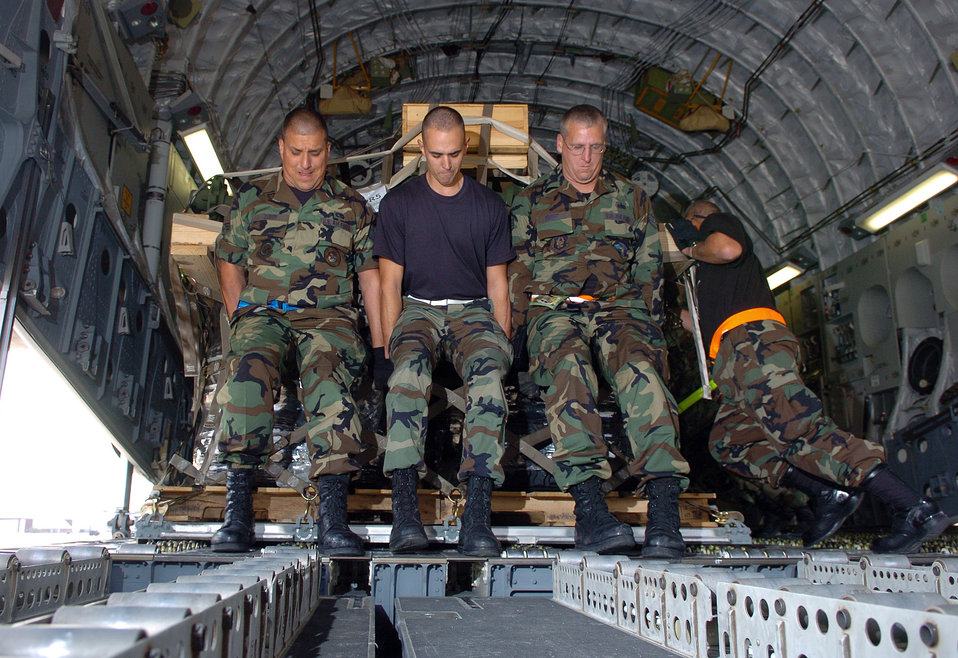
Incirlik AB

Senior Airmen Marco Zuber (left), John Clayton and Staff Sgt. David Ebert load a C-17 Globemaster III at Incirlik AB, Turkey, Nov. 13. Over half of all air cargo delivered to support Operation Iraqi Freedom is processed through here. By flying critical supplies via Globemaster from this eastern Turkey air base directly to troops at remote locations in Iraq, More than 3,300 convoy truck missions and 9,000 servicemembers supporting the convoys are taken off Iraq roads each month. Airmen Ebert, Zuber and Clayton are ramp services specialists assigned to the 728th Air Mobility Squadron.